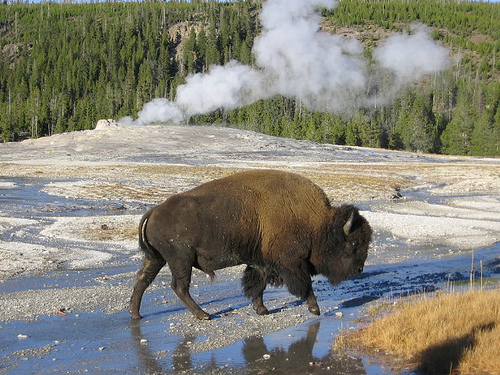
Bison

Uploaded for Flickr member rettelschneck.

Lonely bison enjoying a walk through some of smoking Old Faithful's warm water.

Taken late October 2007 at Yellowstone NP.